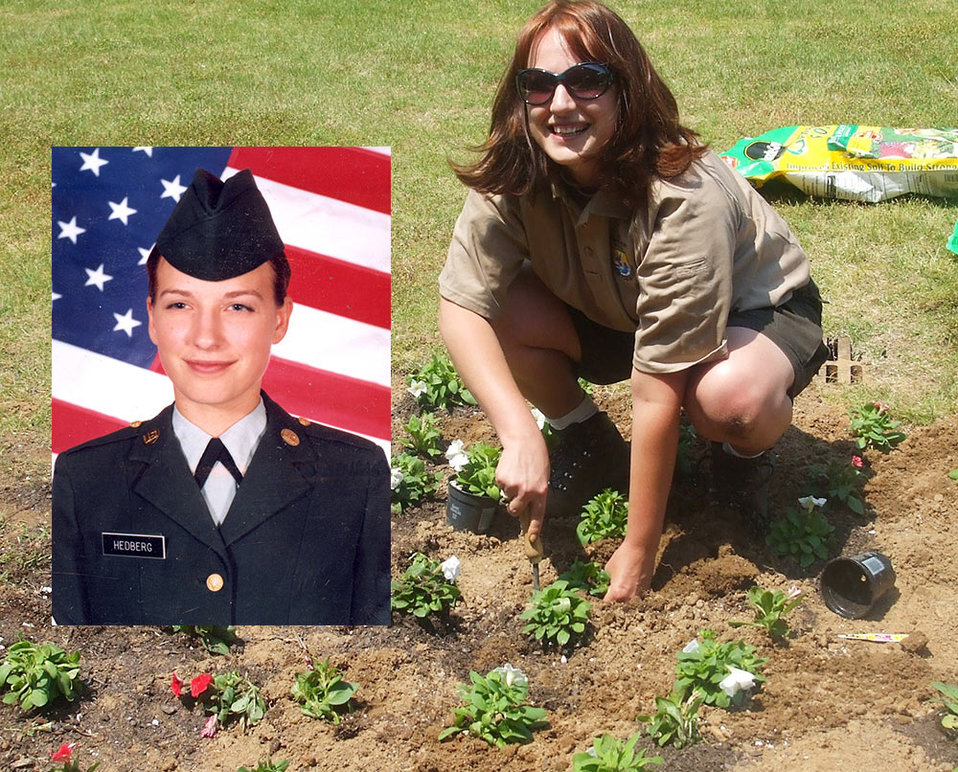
Sandra Spivey-Southeast Region

Sandra Spivey enlisted in the Delayed Entry Program (DEP) her junior year of high school in Colorado Springs, Colorado. She served as 71L, Administration Specialist, after graduating from high school in 1999, and was trained as a 54B, Chemical Operations Specialist, with the 314th Chemical Company, Carrollton, Georgia. Her unit was deployed in Operation Enduring Freedom and due to an unforeseen medical diagnosis during a medical briefing she was assigned to the 2145th Garrison Support Unit, Fort Benning, Ga., and served as a liaison for injured soldiers during the war. Sergeant Sandra Spivey served six proud years in the Armed Forces. Sandra currently serves as the West Georgia Ecological Services Administrative Assistant and is seen here celebrating Earth Day with the implementation of a local schools' outdoor classroom. As a Service employee since 2006, Sandra has earned her B.B.A in Business, and is on track to graduate with her M.B.A. in Sustainable Business this coming spring.